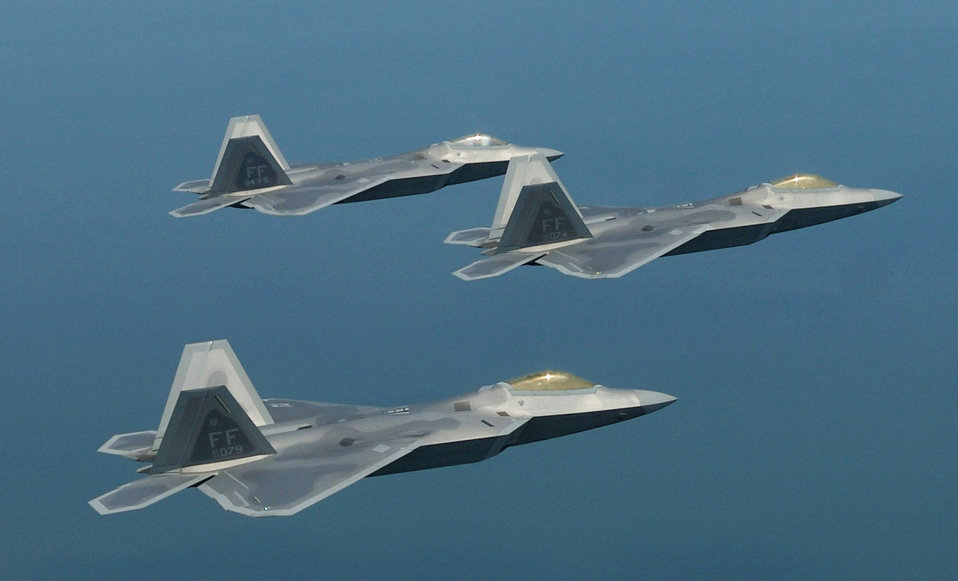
Tinker refurbishes F-22 air turbines

F-22 Raptors fly in formation. Air turbines used in the F-22s are now serviced by the 550th Commodities Maintenance Squadron at Tinker Air Force Base, Okla., as part of a new cooperative agreement with private manufacturers Lockheed Martin and Honeywell. The squadron will maintain more than 30 components from the high-tech air superiority fighter.